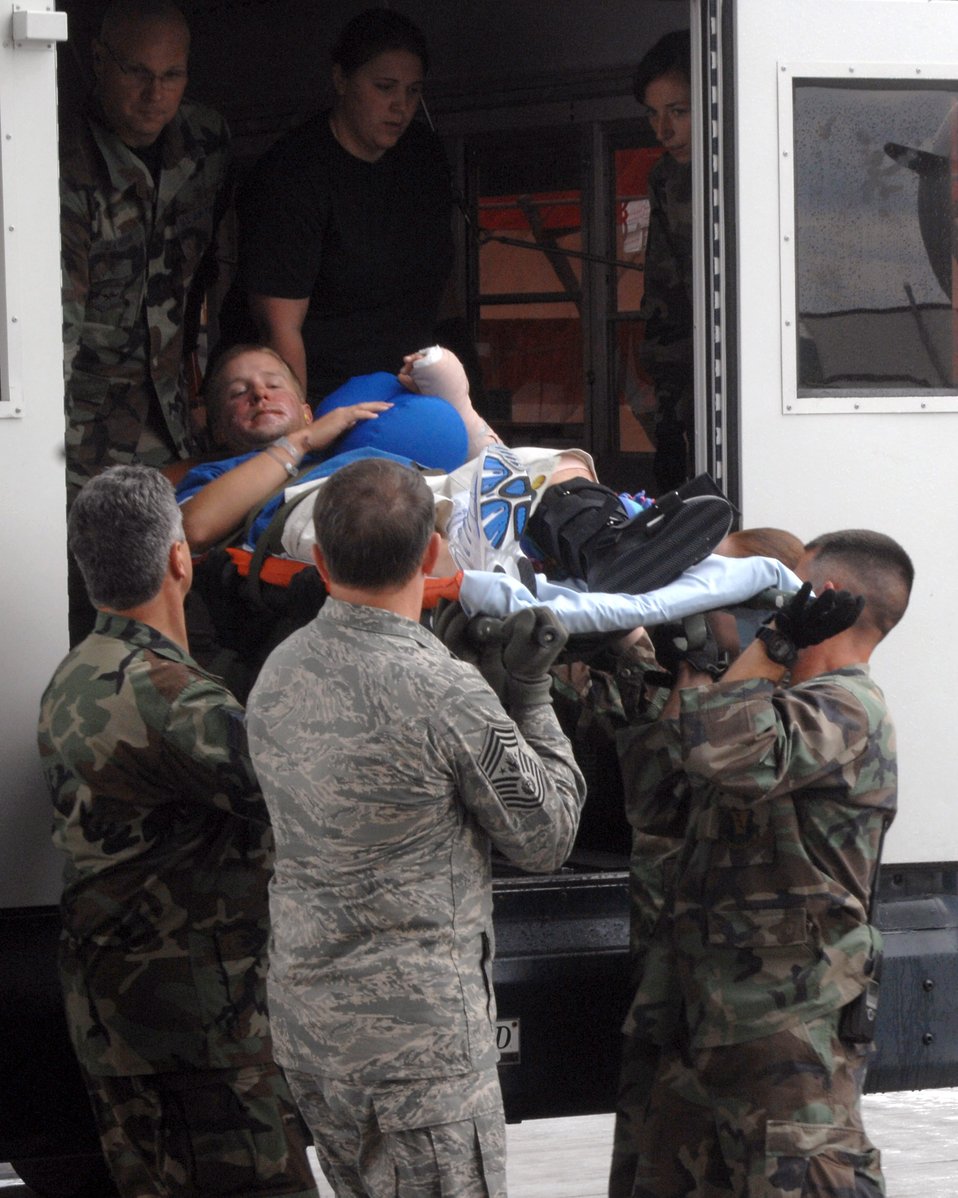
CMSAF assists with aeromedical evacuation

Chief Master Sgt. of the Air Force Rodney J. McKinley and members of the 435th Aerospace Medicine Squadron help load a patient going onto an aeromedical evacuation flight July 10 at Ramstein Air Base, Germany. Chief McKinley followed patients through Landstuhl Regional Medical Center to the Contingency Areomedical Staging Facility and finally on the flight back to the states.